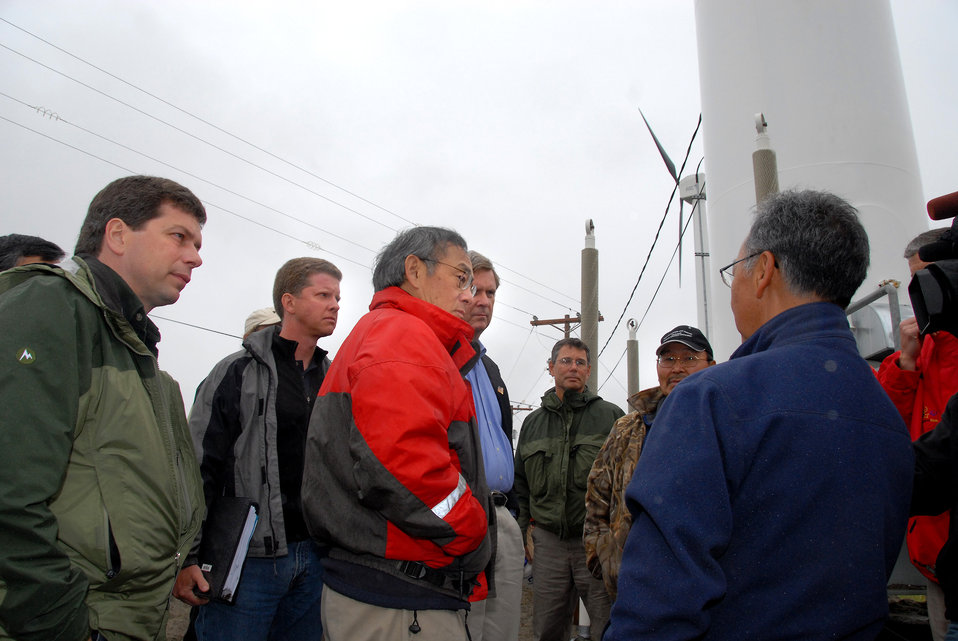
Rural Tour 0342

Rural Tour Alaska Aug 2009